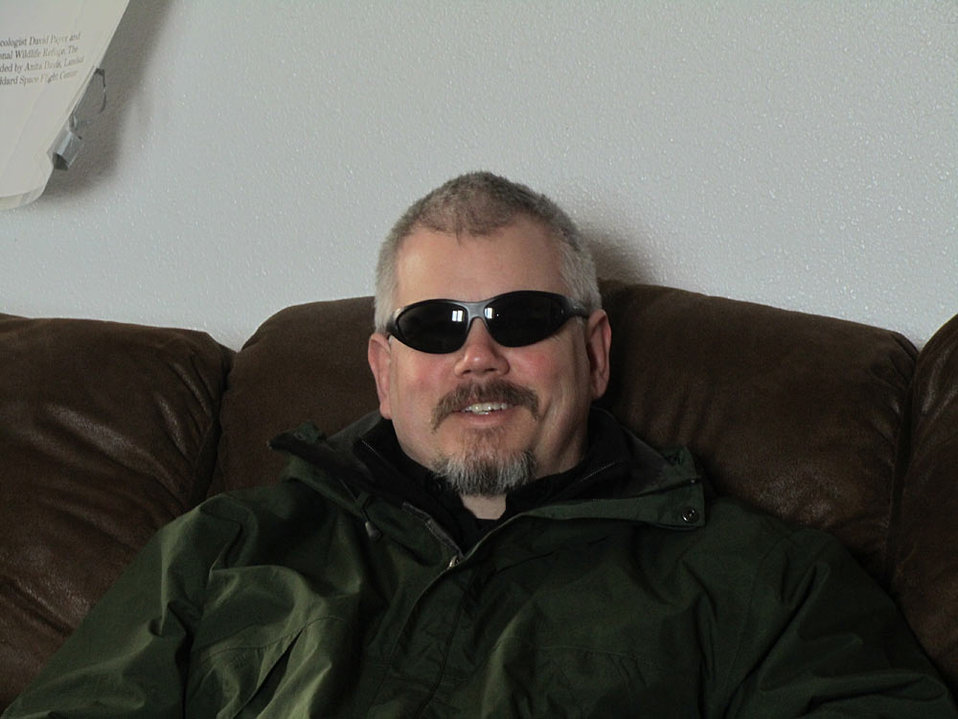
Christopher Putnam-Alaska Region

Christopher Putnam, a veteran of the Iraq War, works in the Polar Bear Program.